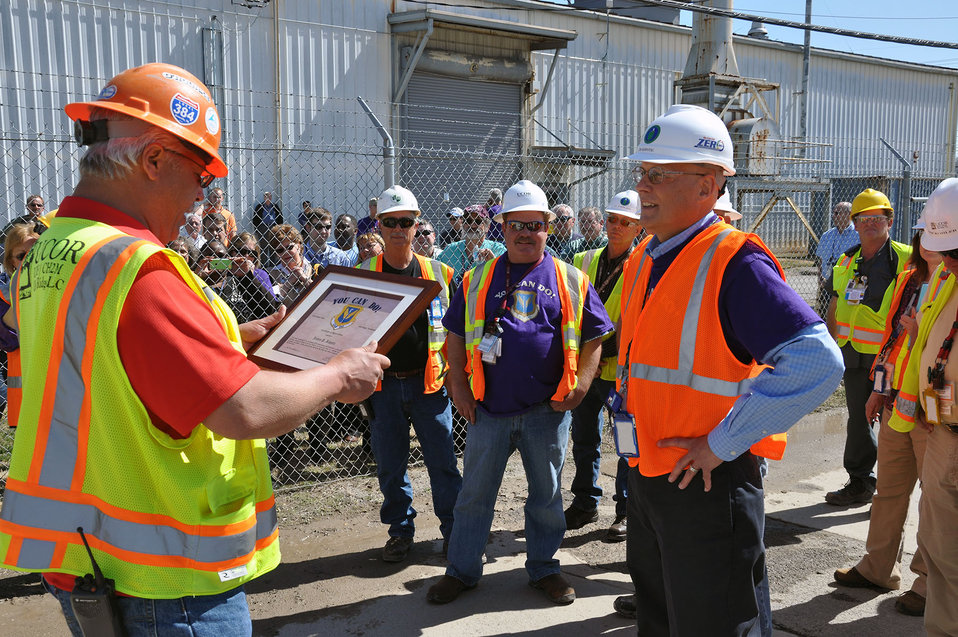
K-25 Demolition Last LoadOak Ridge 2014

14-032 Photo by Wayne McKinney 3-11-214 Oak Ridge Tennessee